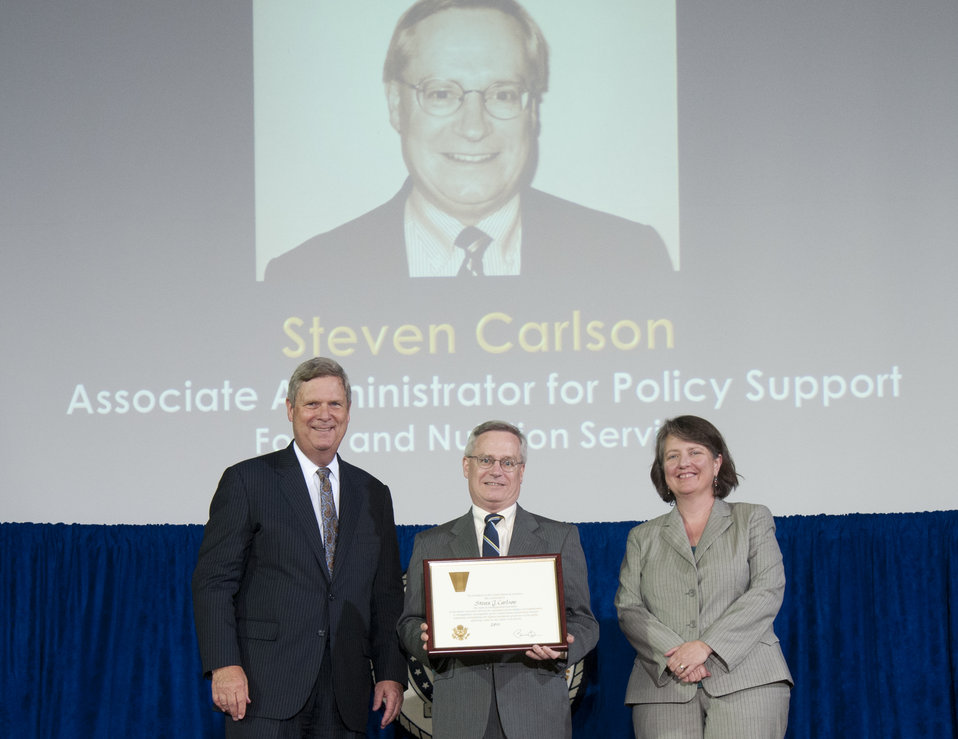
Agriculture Secretary Tom Vilsack and Agriculture Deputy Secretary Kathleen Merrigan present the Presidential Rank Award to Food and Nutrition Service (FNS) Associate Administrator for Policy Support Steven Carlson at the U.S. Department of Agriculture (USDA) 64th Annual Honor Awards Ceremony in Washington, D.C. on Wednesday, Sept. 12, 2012. Presidential Rank Award Winners in the Senior Executive Service receive this award for sustained extraordinary accomplishment in management of programs of the U.S. Government and for leadership exemplifying the highest standards of service to the public, reflecting credit on the career civil service.